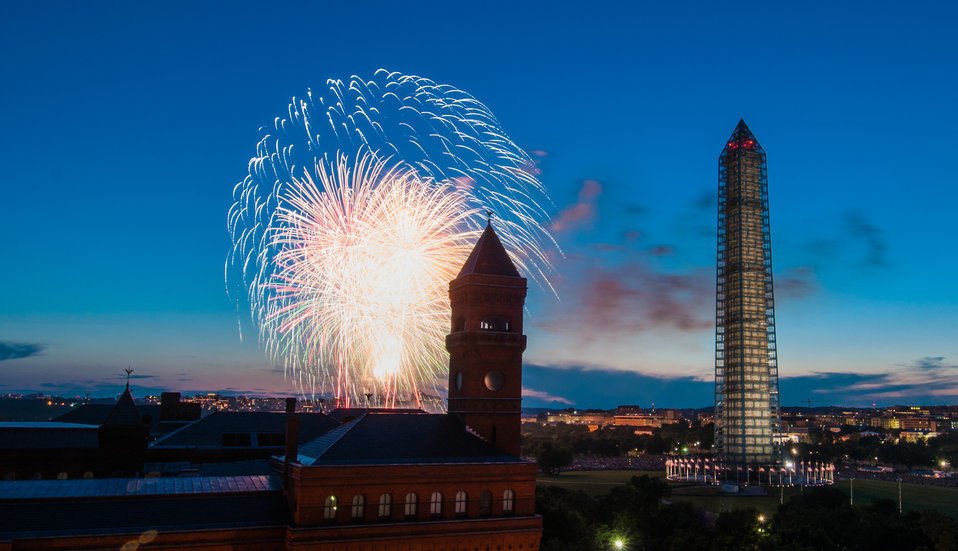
4th of July fireworks as seen from the U.S. Department of Agriculture (USDA) headquarters building, with the USDA Forest Service Yates Building in the foreground, left, and the Washington Monument in Washington, D.C., on July 4, 2013.